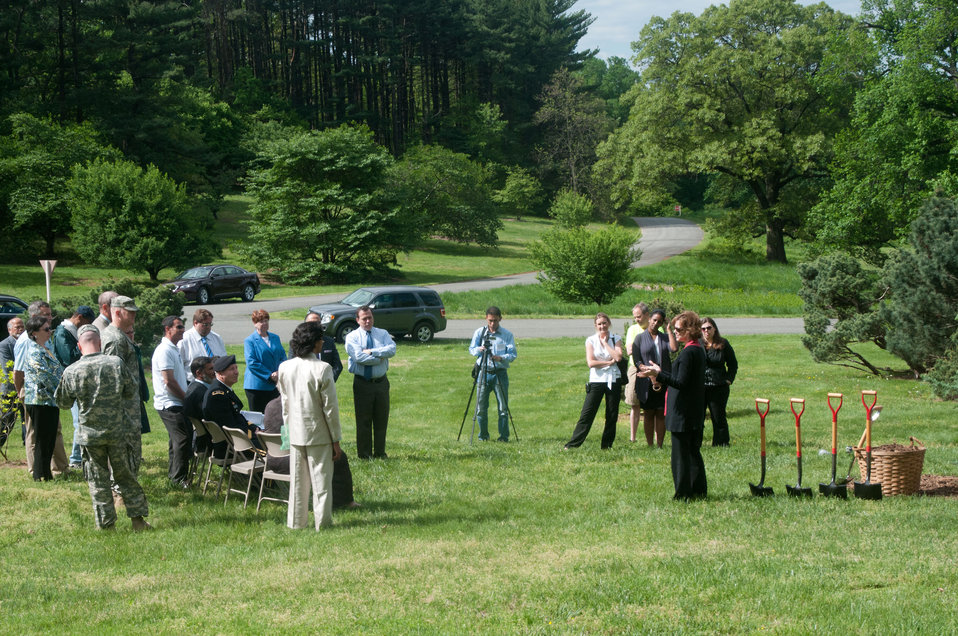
Among the great variety of trees at the U.S. National Arboretum, Army National Guard Major General Darren Owens, Ghazni Directorate of Agricultural Irrigation and Livestock Sultan Hossain, Ghazni University Senior Agricultural Student Abdul Fatah, Agriculture Deputy Under Secretary of Farm and Foreign Agricultural Services Darci Vetter (right, near shovels) spoke to the assembled audience at the Arbor Day tree planting of a Cedrus deodara ('Karl Fuchs') in honor of an Afghan delegation and to represent the bond with Afghanistan. It is the first of this kind of tree to be planted on the grounds. The tree is originally from Pakta Province and the most important tree in Afghanistan for timber.